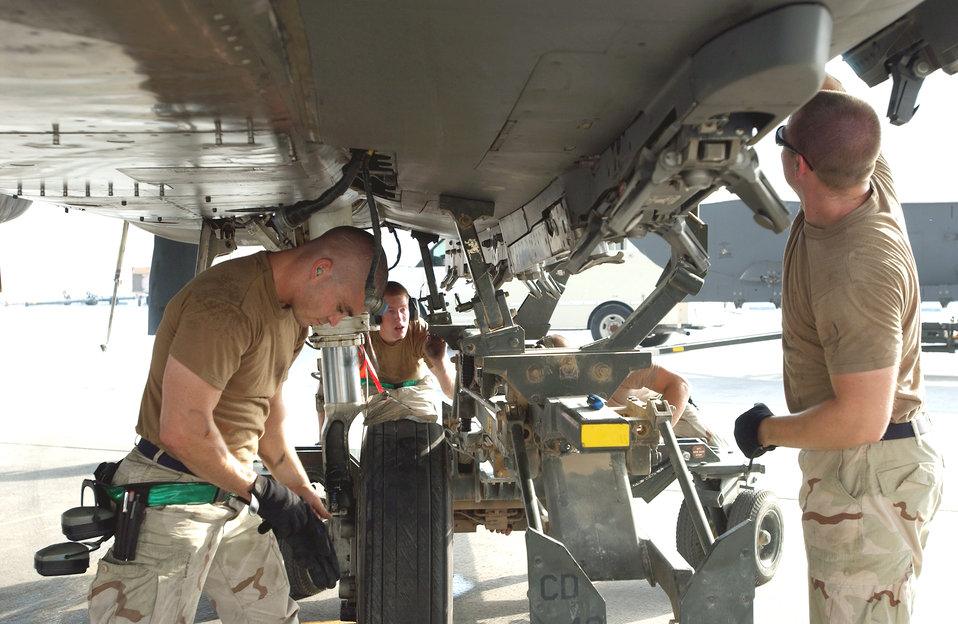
Keeping the strike in the Strike Eagles

(From left) Staff Sgt. Warren Johnson, Senior Airman Paul Moore, Staff Sgt. Dave Kelley and Staff Sgt. Kiel Nichols install a fuel tank on an F-15E Strike Eagle at a forward-operating base in Southwest Asia Sept. 1. The Airmen are crew chiefs deployed from the 335th Aircraft Maintenance Unit at Seymour Johnson Air Force Base, N.C.